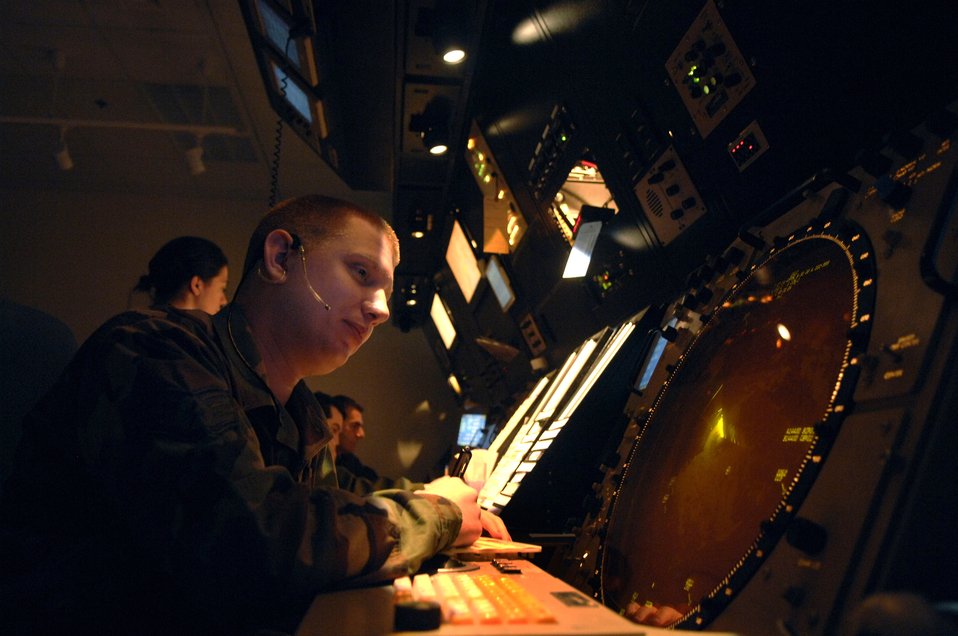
Tower stays on top of things

Staff Sgt. Jeffrey Klein provides expeditious airflow for aircraft flying Nov. 27 over Aviano Air Base, Italy. Air traffic controllers perform duties within a radar facility and maintain radar surveillance of approach control airspace, processing and coordinating aircraft through terminal control. Sergeant Klein is an arrival controller at Aviano AB.